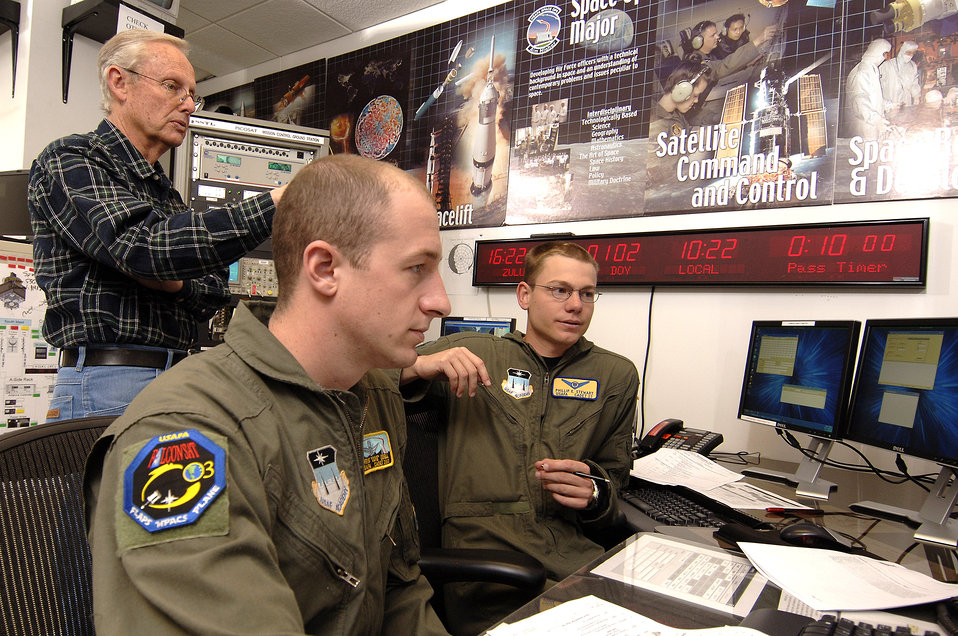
Satellite-savvy cadets accomplish out of world experiments

Senior cadets Christopher Odell and Phillip Stewart verify with technical staff member John Clark April 12 that their software is correctly configured before the next pass of Falcon Satellite-3 at the U.S. Air Force Academy in Colorado Springs, Colo. FalconSAT-3 is undergoing testing 100,000 feet from Earth in preparation for experiments involving space weather and spacecraft operations. The satellite was designed and built, by Academy cadets who now test and operate it. The project is administered by the USAFA Space Systems Research Center.